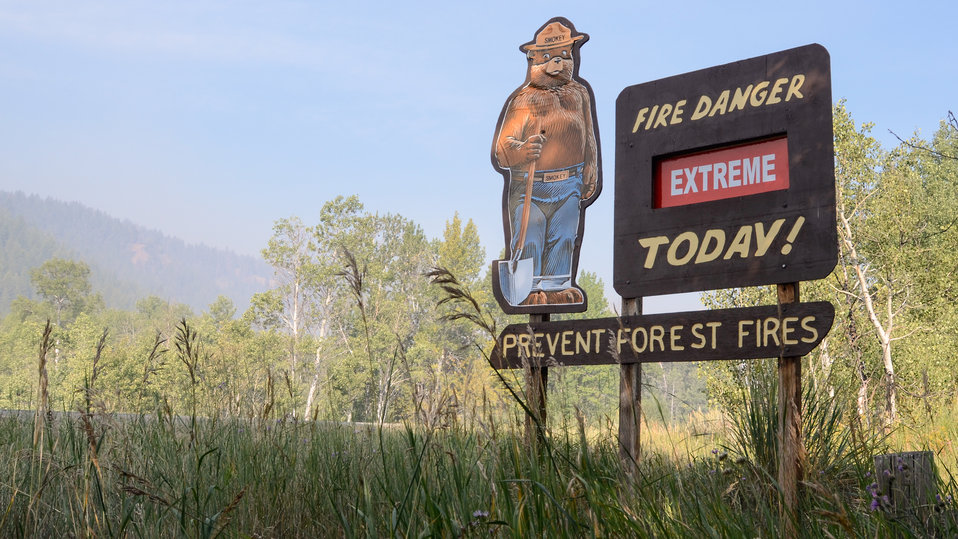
A road side Smokey Bear sign continues to tell motorists that the fire conditions are 'Extreme' today, during the Beaver Creek Fire, in the U.S. Department of Agriculture (USDA) Forest Service (FS) Sawtooth National Forest and Bureau of Land Management (BLM) lands, near Hailey, ID, on Tuesday, Aug 20, 2013.